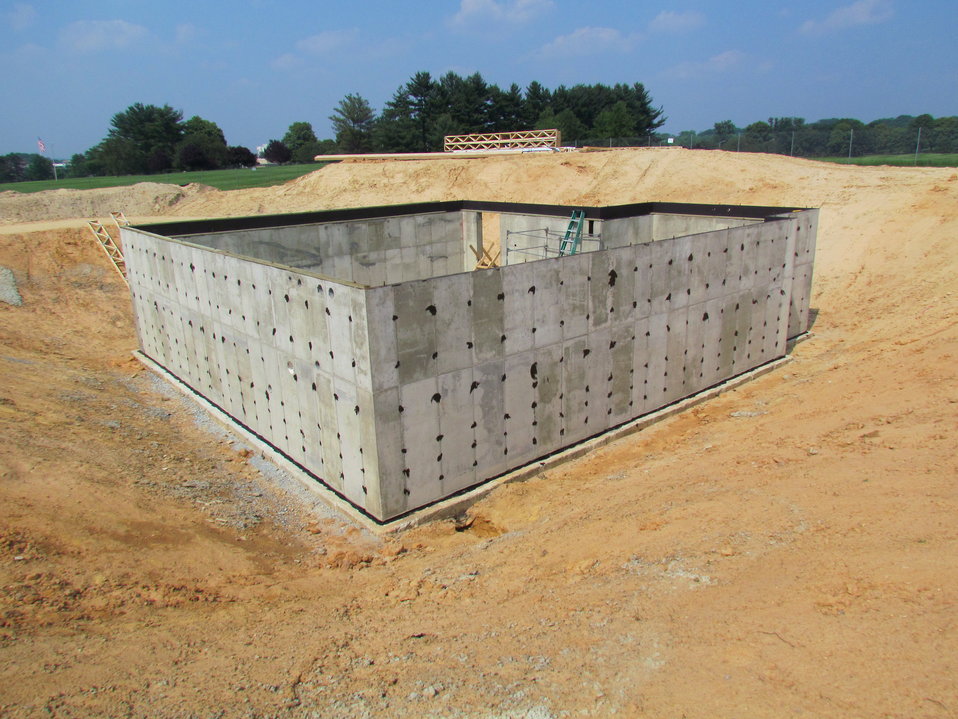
Net-Zero Energy Residential Test Facility - Construction photo showing poured concrete basement walls.